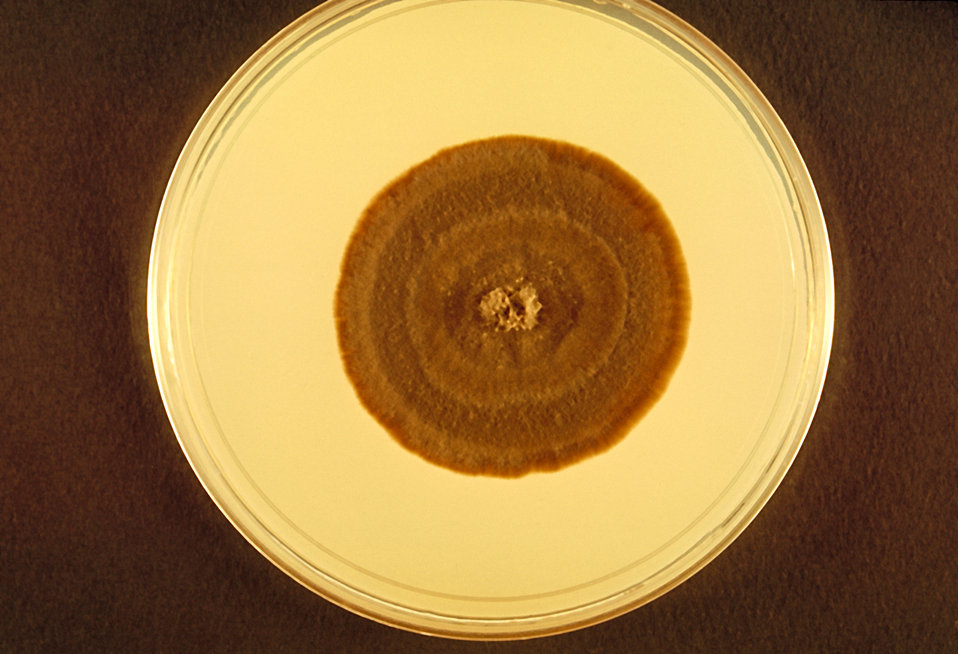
This is a plate culture growing a colony of the fungus Exophiala salmonis.